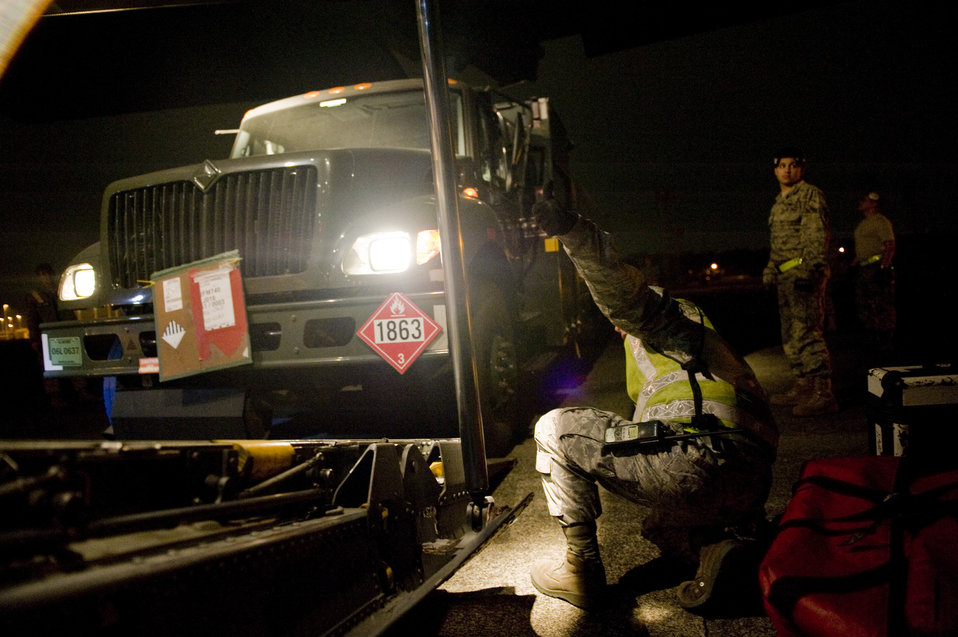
Yokota AB Airmen deliver fuels truck to aid Japan's relief efforts

Tech Sgt. Michael Holcomb, 730th Air Mobility Squadron, gives the thumbs up for clearance as a fuels truck is loaded onto a C-130H Hercules here March 15. The fuels truck was taken to Yamagota Airport to be used in support of Japan's earthquake and tsunami relied efforts.